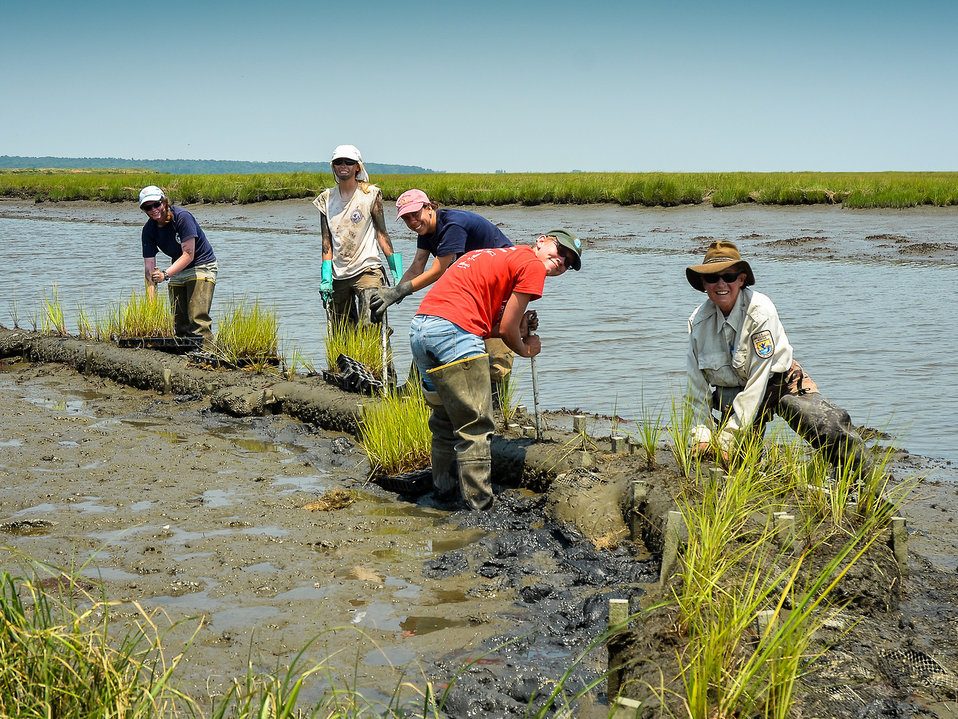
Restoring Tidal Marsh

Staff and volunteers restoring tidal marsh at Edwin B. Forsythe National Wildlife Refuge.